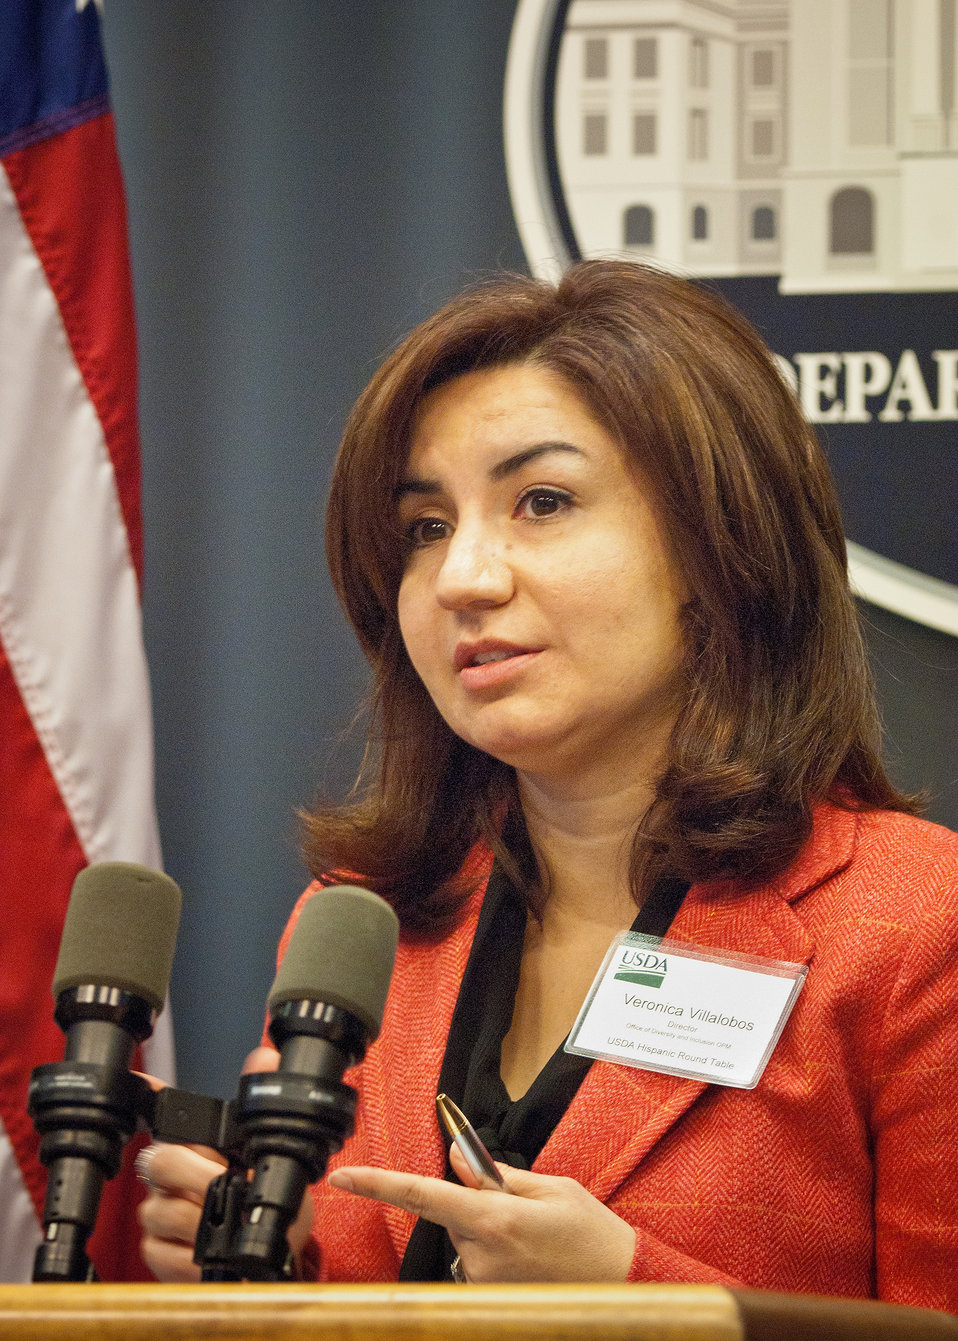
Veronica Villalobos, Director, Office of Diversity and Inclusion, Office of Personnel Management
explained OPM policy at the United States Department of Agriculture Hispanic Roundtable at the United States Department of Agriculture, Monday, December 5, 2011 in Washington, DC. The roundtable focused on recruitment, retention and employee development for the purpose of developing the USDA Hispanic recruitment Plan. The roundtable hosted several national Hispanic partners and recognized USDA Hispanic organizations and associations.